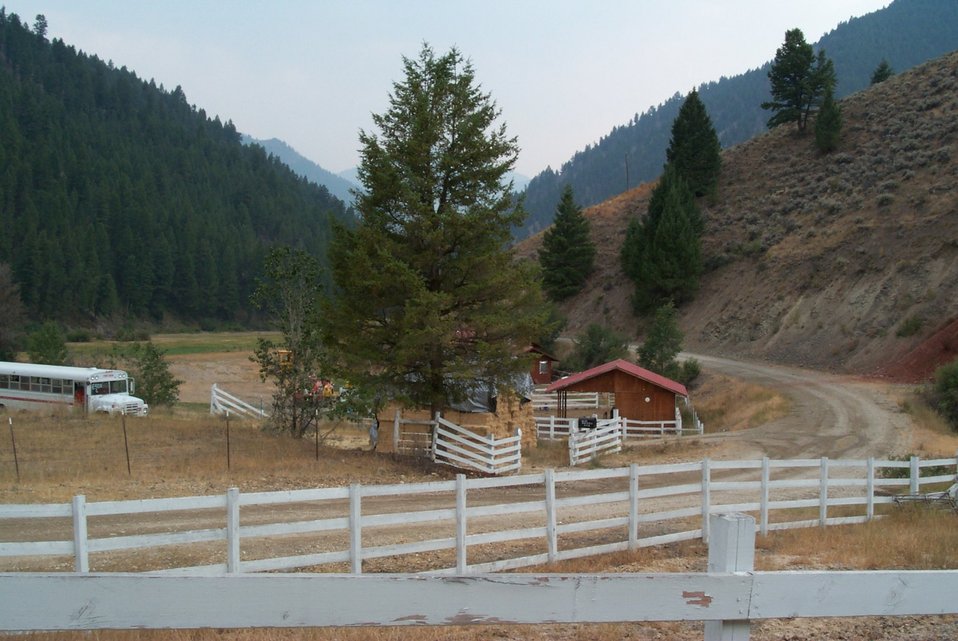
Fire retardant measures Urban interface Fire Clearwater Fire Salmon Field Office USRD Upper Snake River District